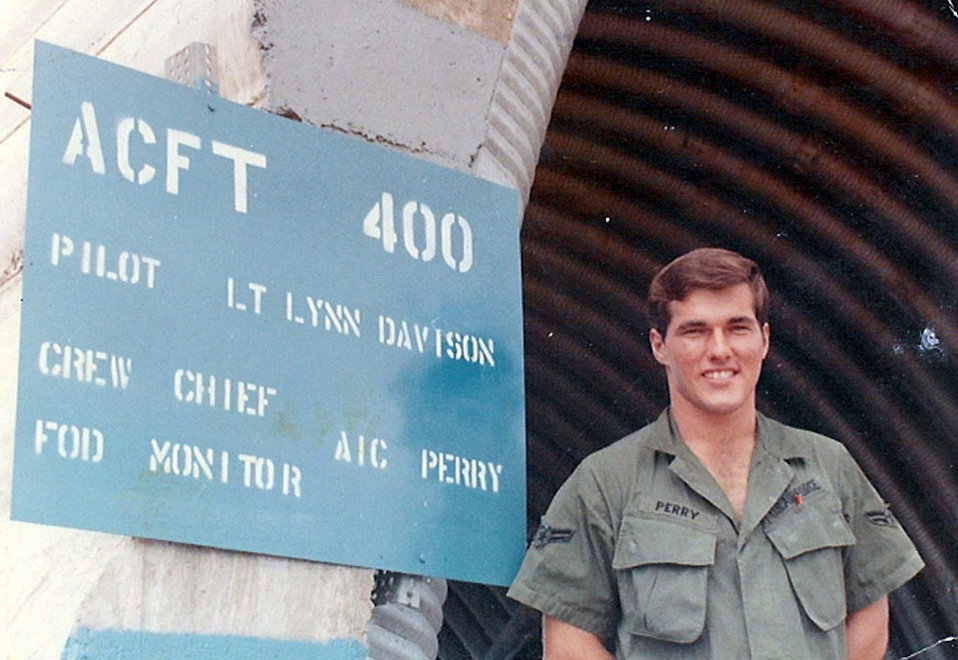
Chaplain Perry

PHAN RANG AIR BASE, Vietnam -- Then-Airman 3rd Class Charles Perry poses in front of his work center during the Vietnam War where he was an F-100 Super Sabre crew chief. He became a chaplain in 1988 and currently is the 407th Air Expeditionary Group Protestant chaplain at Ali Base, Iraq.